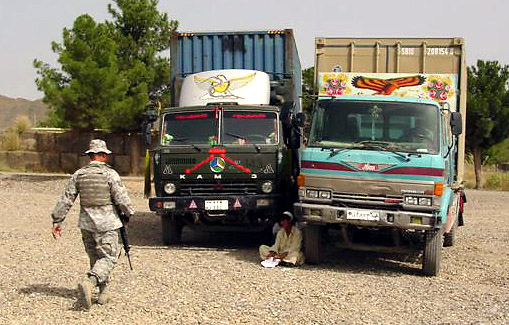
Airmen manage cargo at logistical hub in Afghanistan

Staff Sgt. Arnoldo Vazquez approaches a local truck driver awaiting clearance into the cargo yard at Forward Operating Base Salerno, Afganistan. Sergeant Vazquez is responsible for clearing all supply drivers and their